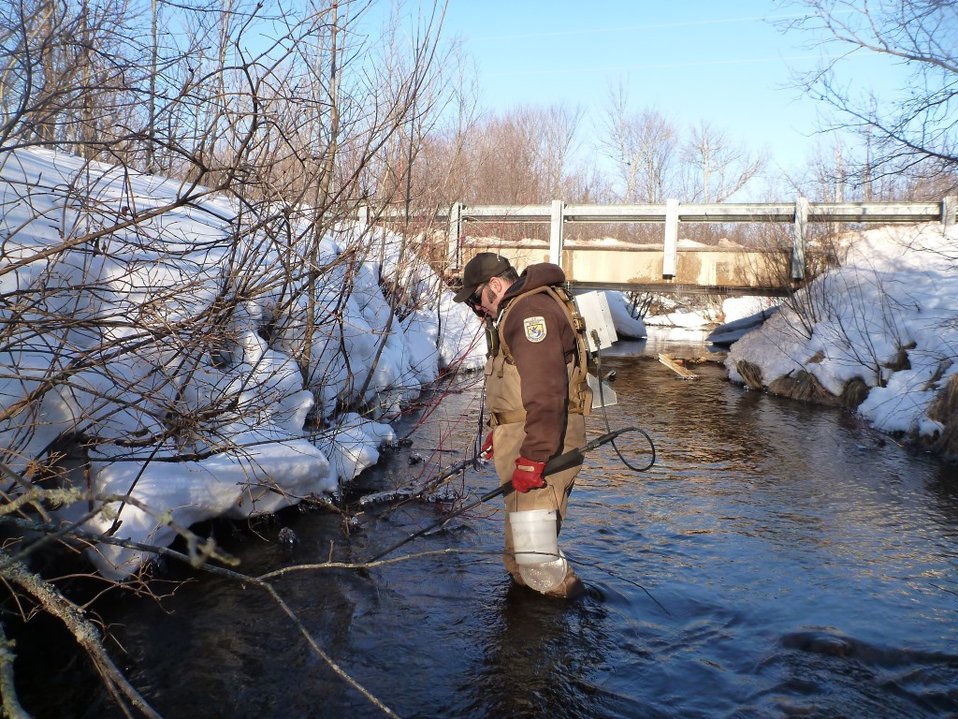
Service Employee Matt Symbal electrofishing in Wislon Creek, a tributary to the Big Garlic River, Marquette County, MI.